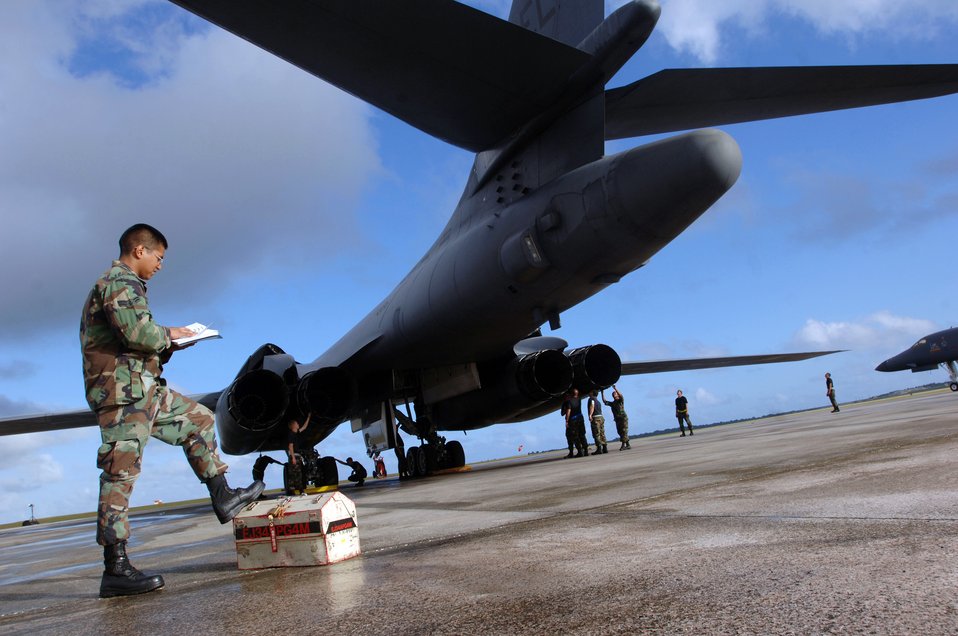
Mission ready

ANDERSEN AIR FORCE BASE, Guam -- B-1B Lancer mechanics inspect their aircraft before a morning sortie here. The Airmen are from the 28th Aircraft Maintenance Squadron at Ellsworth Air Force Base, S.D.